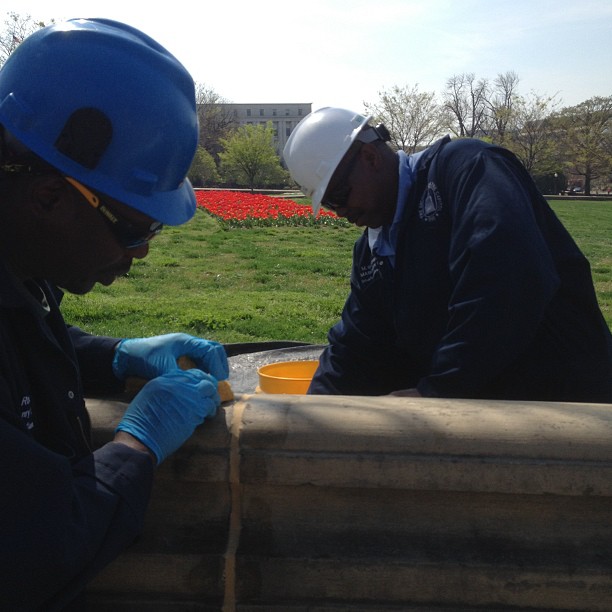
Great day for AOC stonemasons repairing the historic Capitol Olmsted walls.